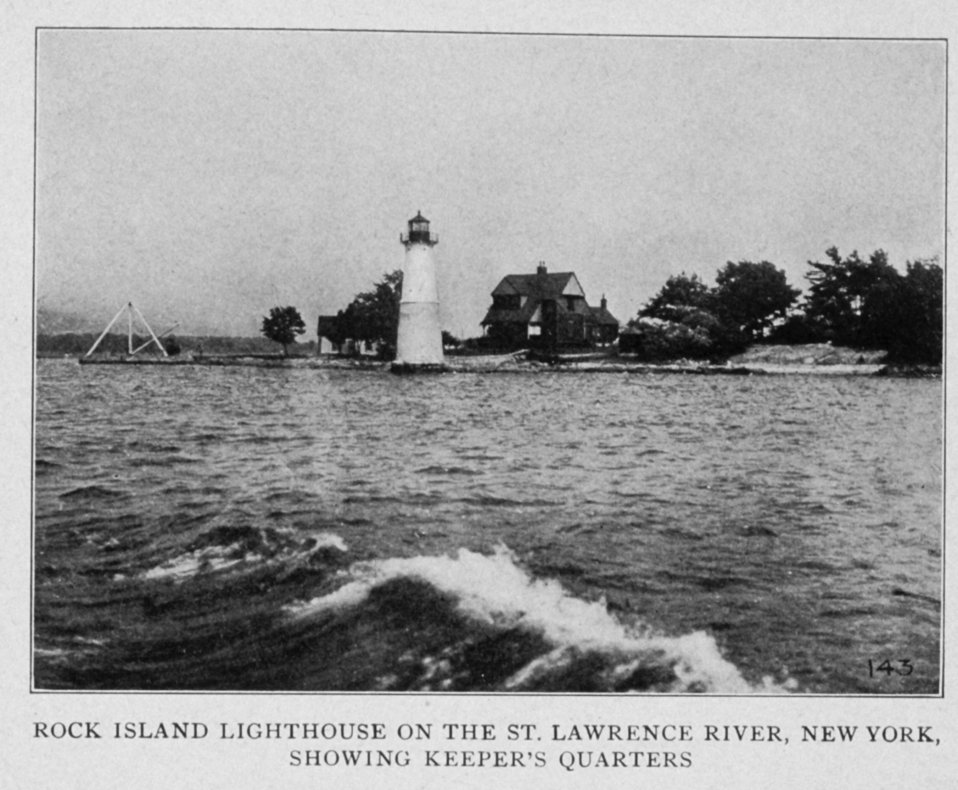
Rock Island Lighthouse on the St. Lawrence River, New York, Showing the Keeper's Quarters. In: 'Lighthouses and Lightships of the United States' by George R. Putnam, p. 250, 1917. Houghton Mifflin and Company, Boston. Library Call No. 527.7 P98.